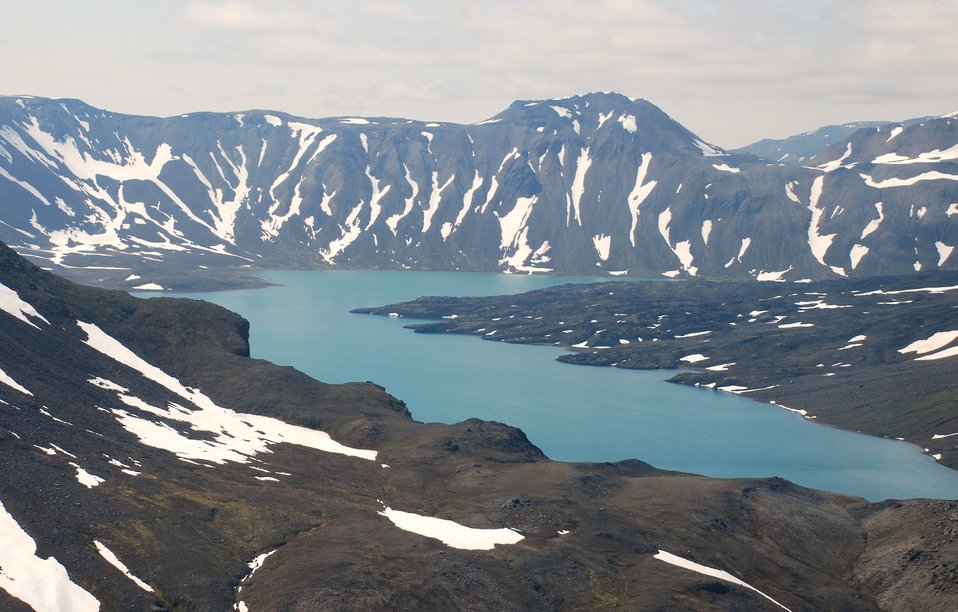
Lake Emmons

Alaska Peninsula National Wildlife Refuge